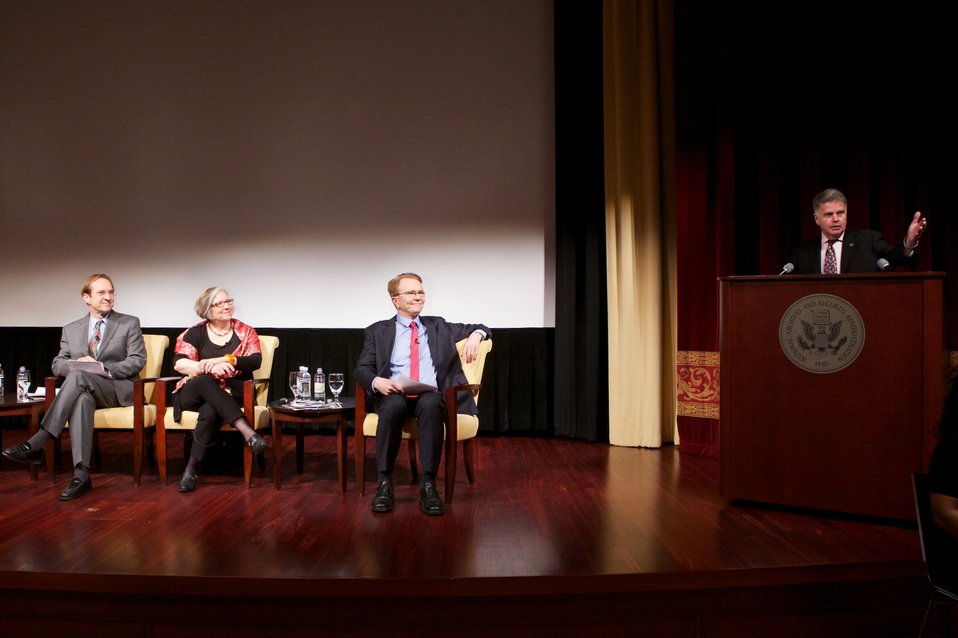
Jazz Diplomacy: Sending America's Music to the World